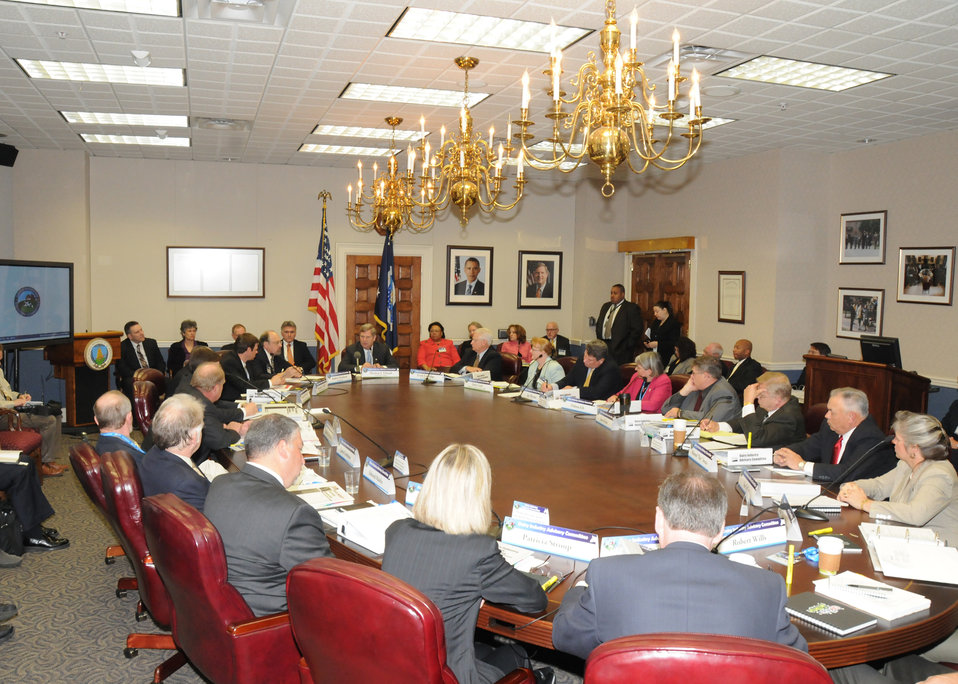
Agriculture Secretary Tom Vilsack spoke to the 17 member Dairy Industry Advisory Committee (DIAC) and dairy industry representatives in the Williamsburg room at the Department of Agriculture in Washington, D. C., on Tuesday, April 13, 2010. The committee, which was established by USDA in August 2009, was designed to advise the secretary on policy issues impacting the dairy industry. The three-day public meeting will allow members to review farm milk price volatility and dairy farmer profitability, and make recommendations on how USDA can best address the long- and short-term needs of the dairy industry. USDA photo 10di1306-38